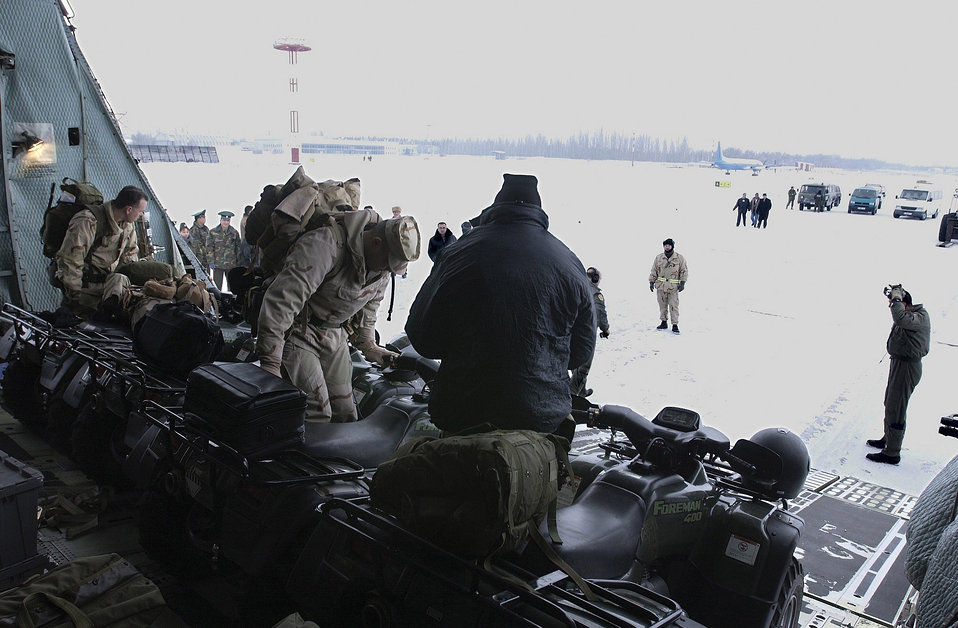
Beating the winter clock

OPERATION ENDURING FREEDOM -- U.S. Air Force crews from European bases arrive in Manas, Kyrgyzstan, in support of Operation Enduring Freedom on Dec. 18. Coalition allies are working around the clock to get food, blankets, medicine and other important humanitarian aid to the Afghan people before their harsh winter sets in.